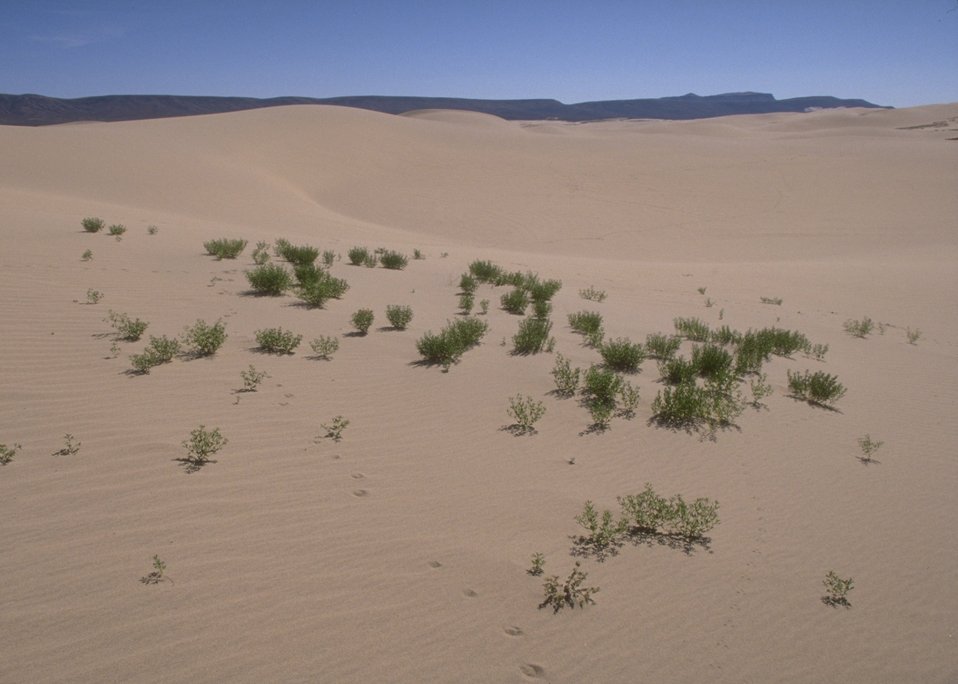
OHV Sand Dunes Area, Rock Springs Field Office.